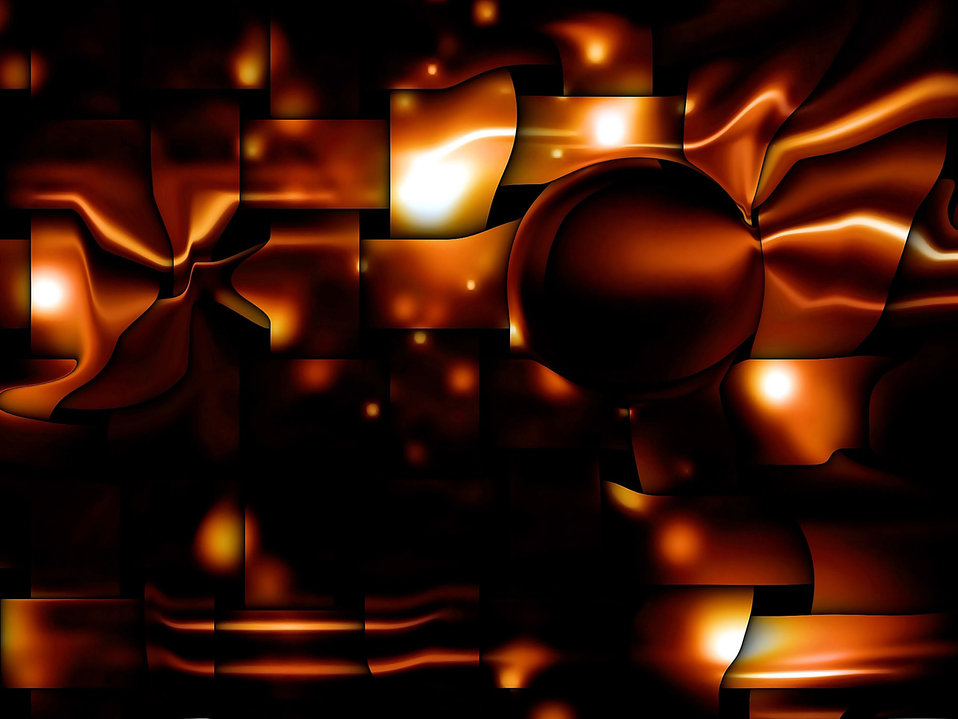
Background 226

Background.